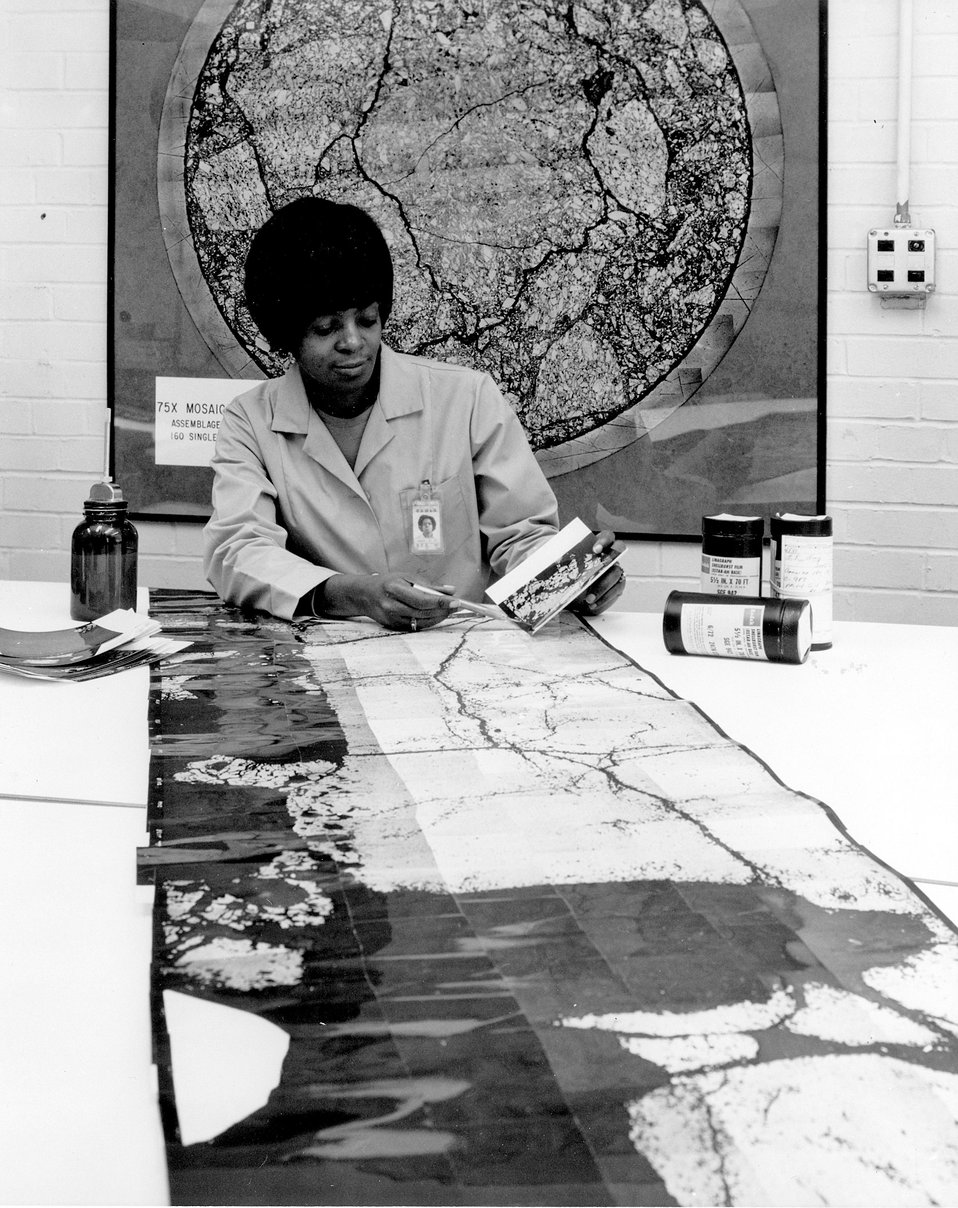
A capability of rapid production of photo mosaics of irradiated fuel pins has been developed by the AEC's Pacific Northwest Laboratory at Richland, Washington. c. 1973